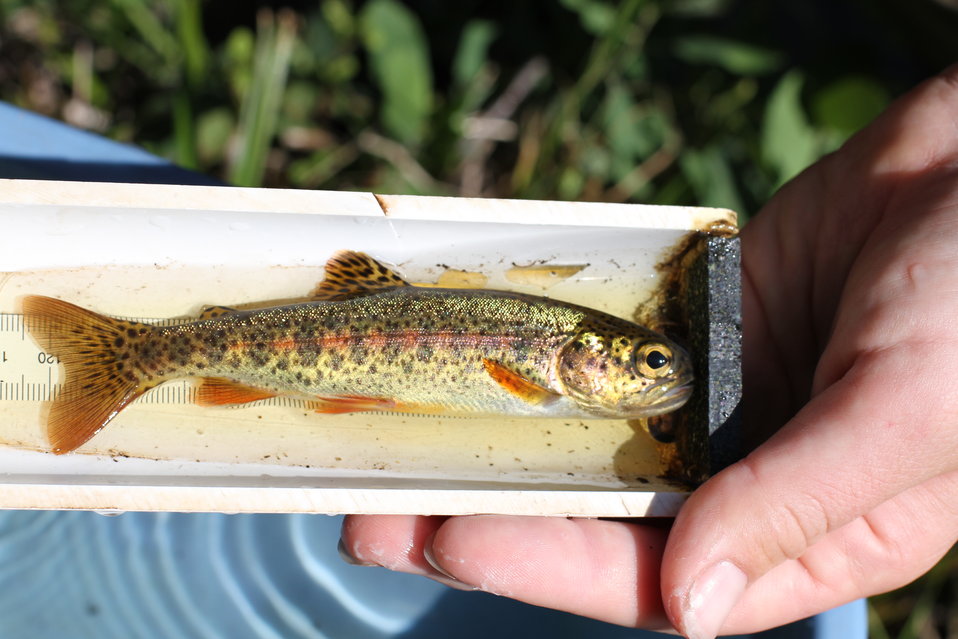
juvenile rainbow trout, Fish Creek Alaska

USFWS/Katrina Mueller